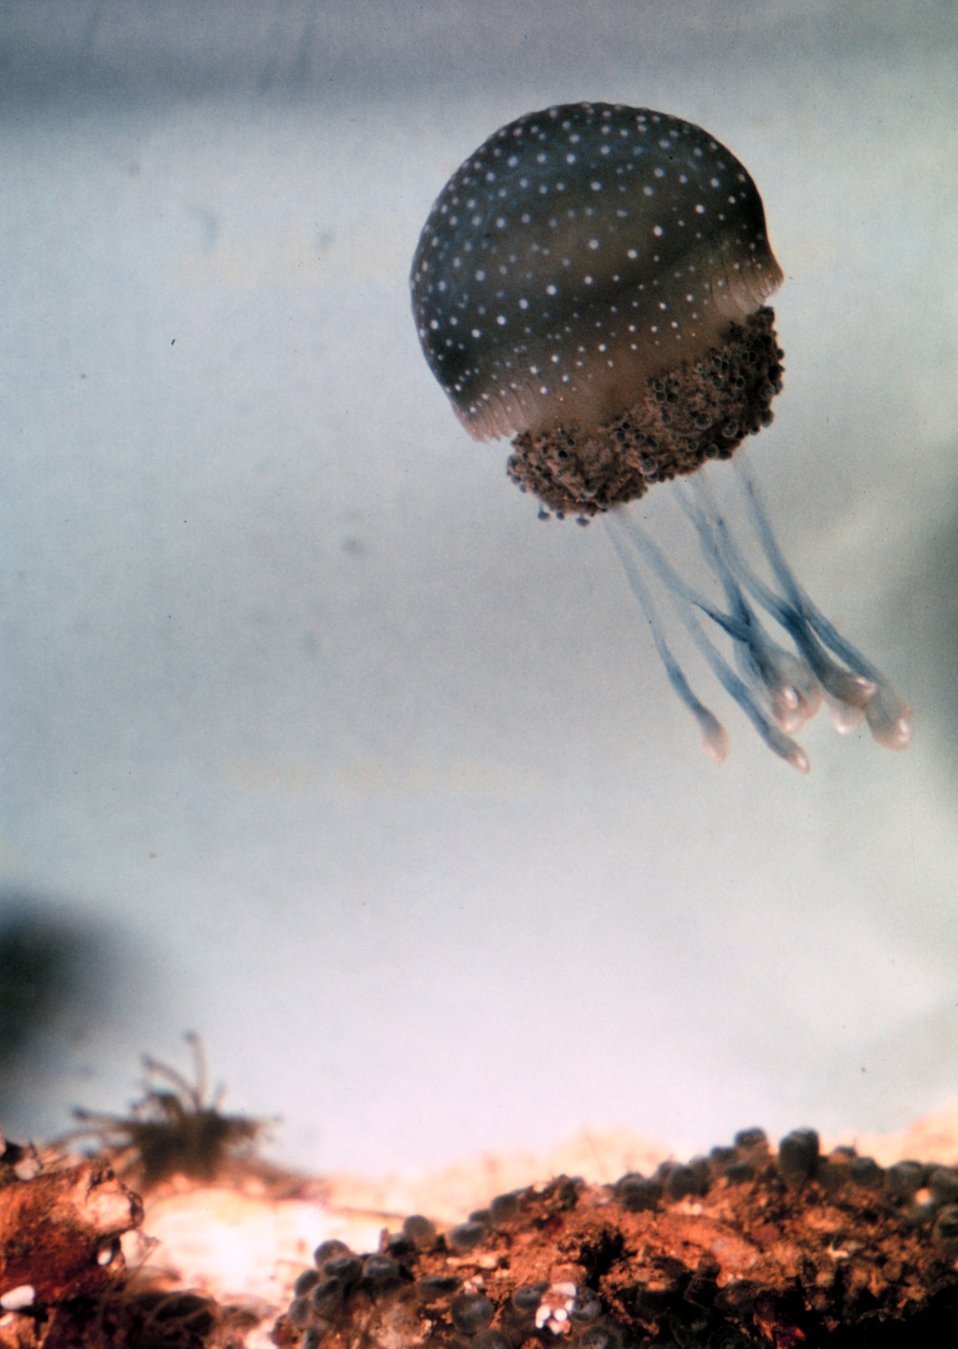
Jellyfish